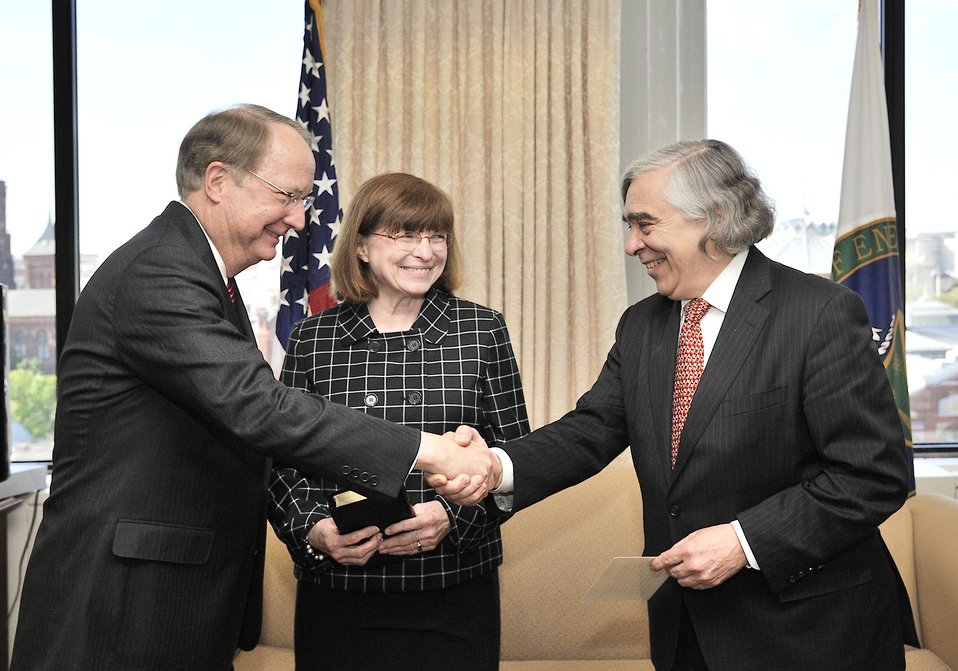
Secretary of Energy Ernest Moniz swore in Frank G. Klotz as the Department of Energy’s Undersecretary for Nuclear Security and NNSA Administrator in a private ceremony this afternoon. General Klotz was joined by his wife, Nancy, and Acting Administrator Bruce Held on April 17, 2014.